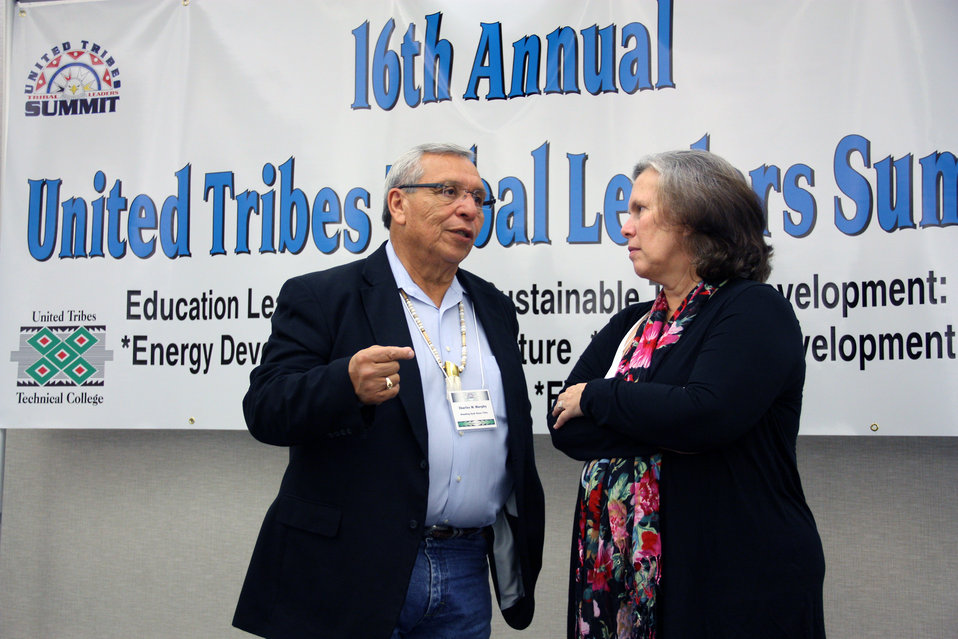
U.S. Department of Agriculture (USDA) Senior Adviser for Tribal Relations, Office of Tribal Relations Janie Hipp talks with Standing Rock Sioux Tribal Chairman Charles Murphy at the 16th Annual United Tribes Tribal Leaders Summit in Bismarck, ND on September 6, 2012. Hipp congratulated Murphy on the recently approved $1 million grant for a wastewater treatment system that his tribe had received.